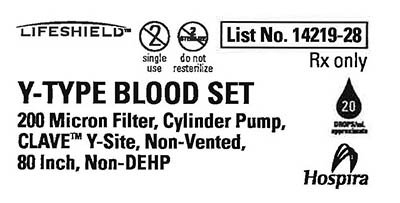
RECALLED – Blood sets used for the administration of blood and blood products

August 13, 2013 – Product Recall – Hospira Issues Important Safety Information for Blood Sets.